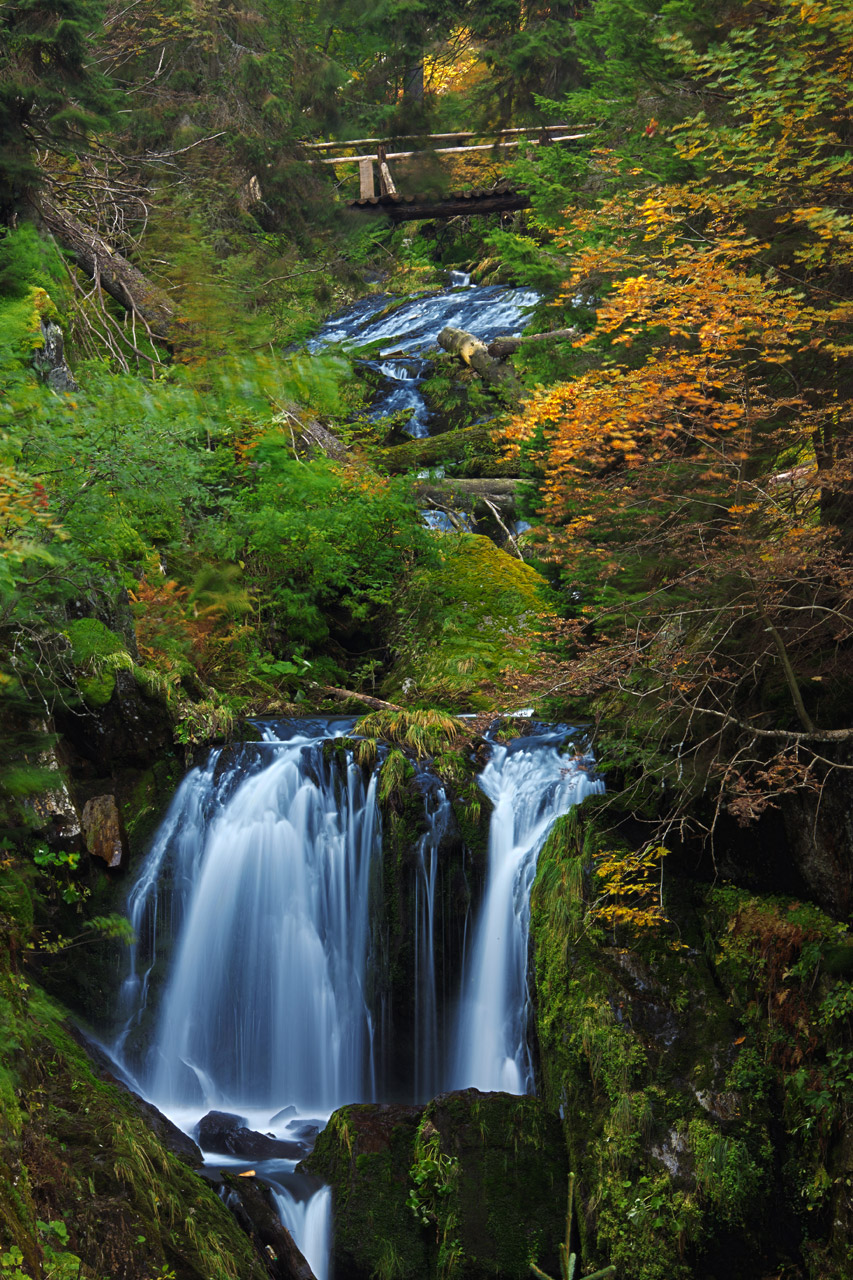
Waterfalls in the forest

Mountain stream in motion in bila opava walk in autumn.